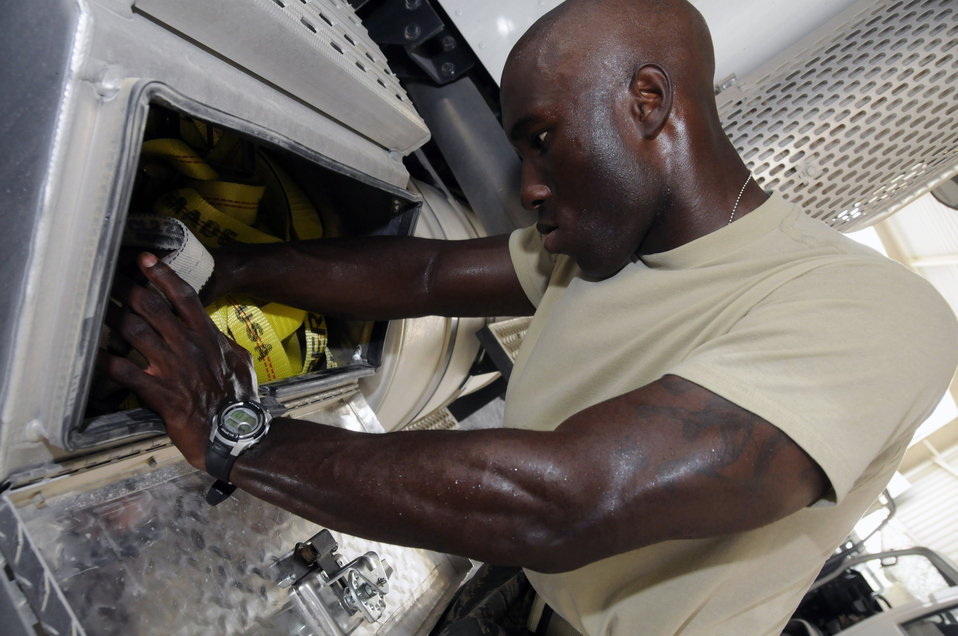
Nothing gets past us

Senior Airman Waun Brown, a search member assigned to the 379th Expeditionary Security Forces Squadron, checks a compartment in a truck Aug. 19 at an air base in Southwest Asia. Airman Brown and the rest of his team ensure the safety and security of the air base by carefully inspecting all incoming vehicles for explosives and weapons. Airman Brown, a native of Savannah, Ga., is deployed from Tyndall Air Force Base, Fla..